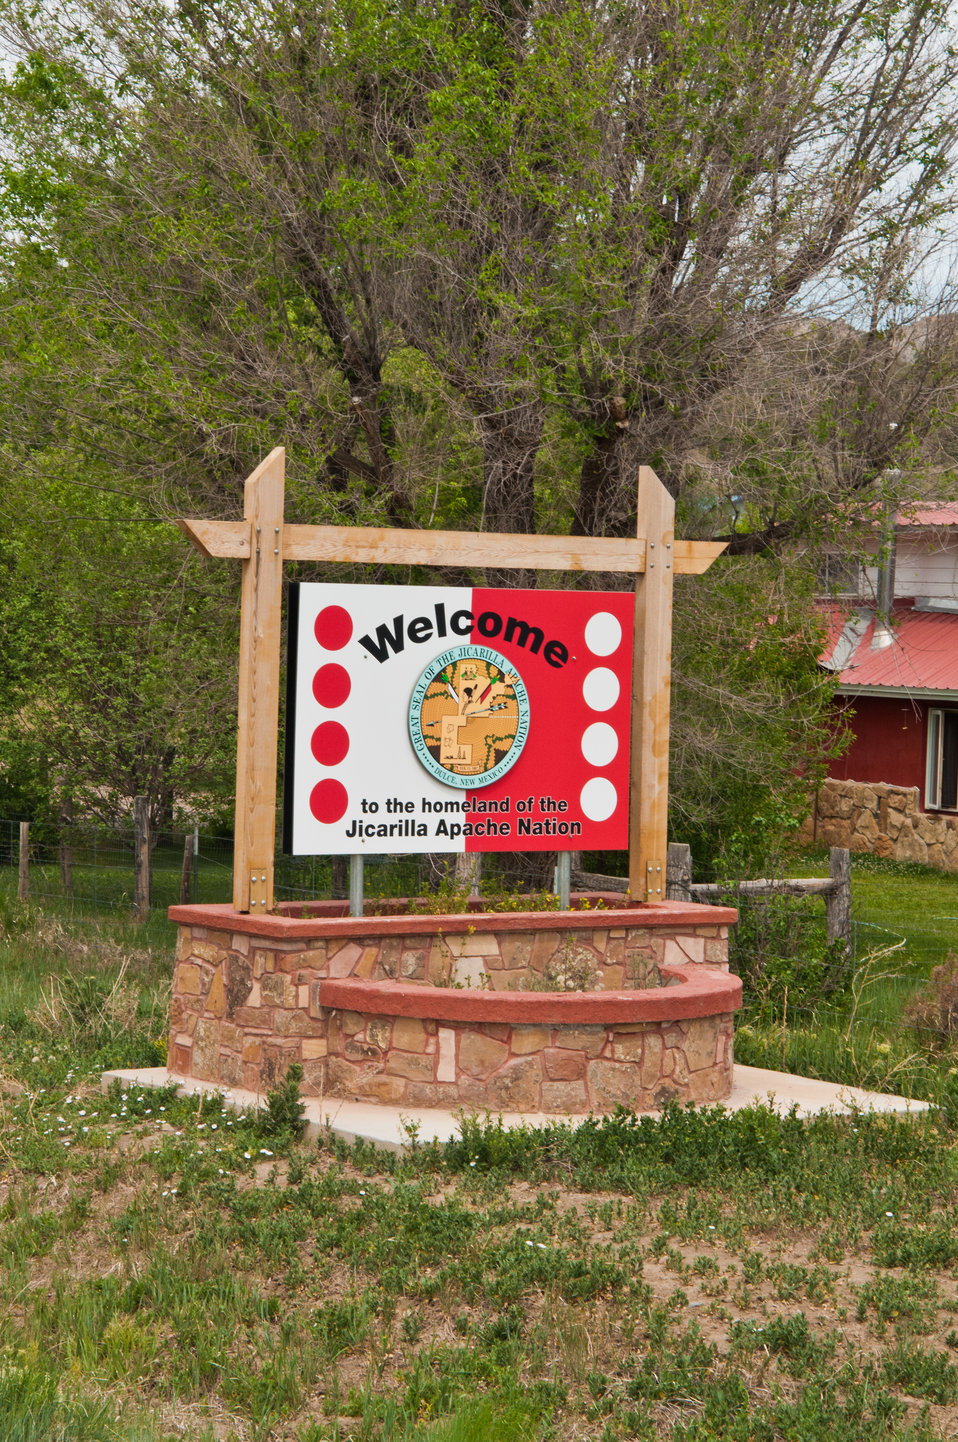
Community and tribal members of the The Jicarilla Apache Nation were able to listen to employees of the U.S. Department of Agriculture's (USDA) Natural Resources Conservation Service (NRCS) explain conservation programs offered by the agency during a Conservation Planning Meeting at the Jicarilla Apache Nation in Dulce, NM on Wednesday, Jun. 12, 2013.